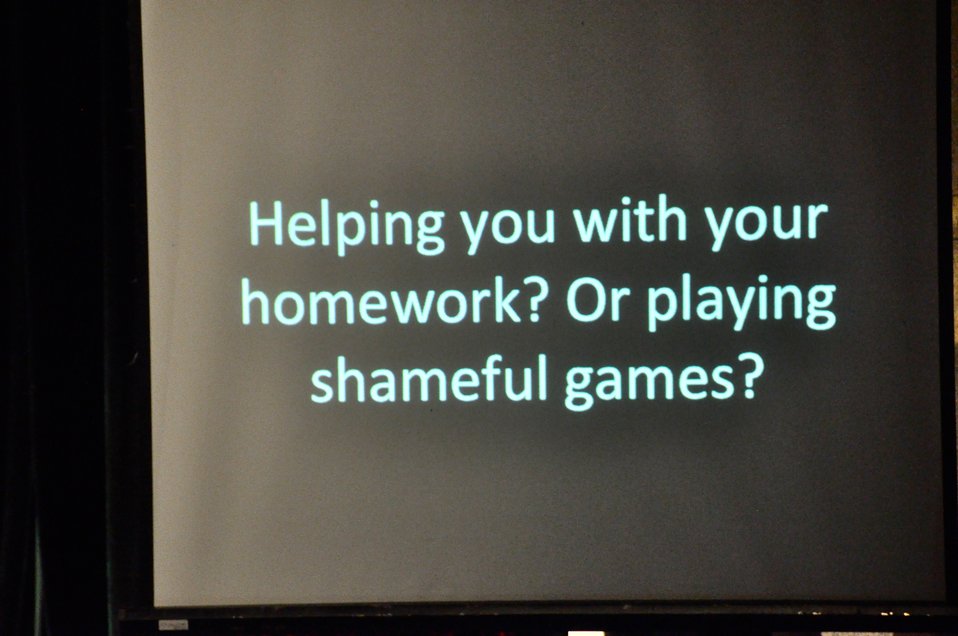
PEPFAR Musical Questions and Exclamations